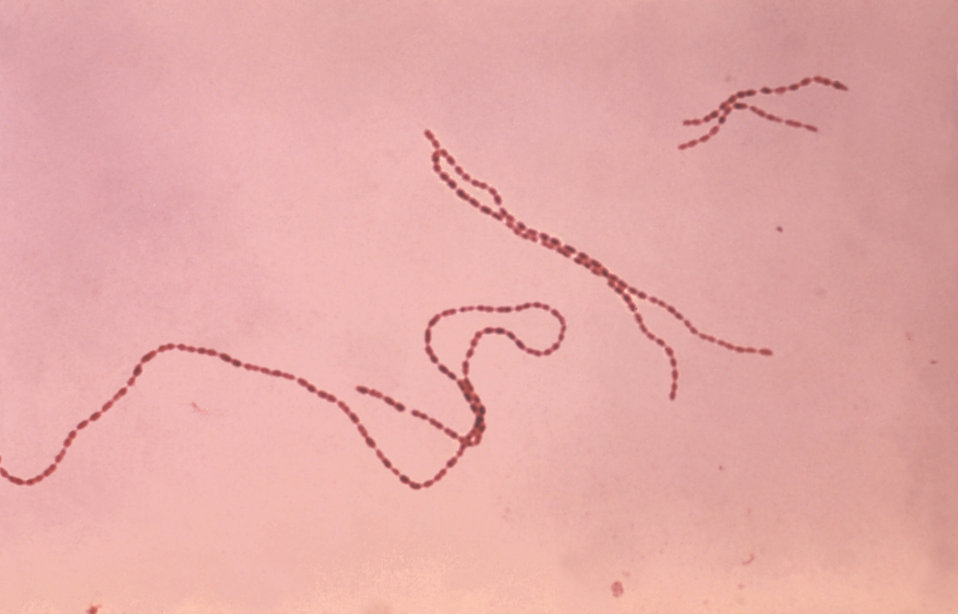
This 1976 Gram-stained photomicrograph depicted a number of chains of Gram-positive, anaerobic, coccoid (GPAC) Coprococcus eutactus bacteria. Bacteriologist commonly refer to these bacteria as Peptococci or Peptostreptococci.